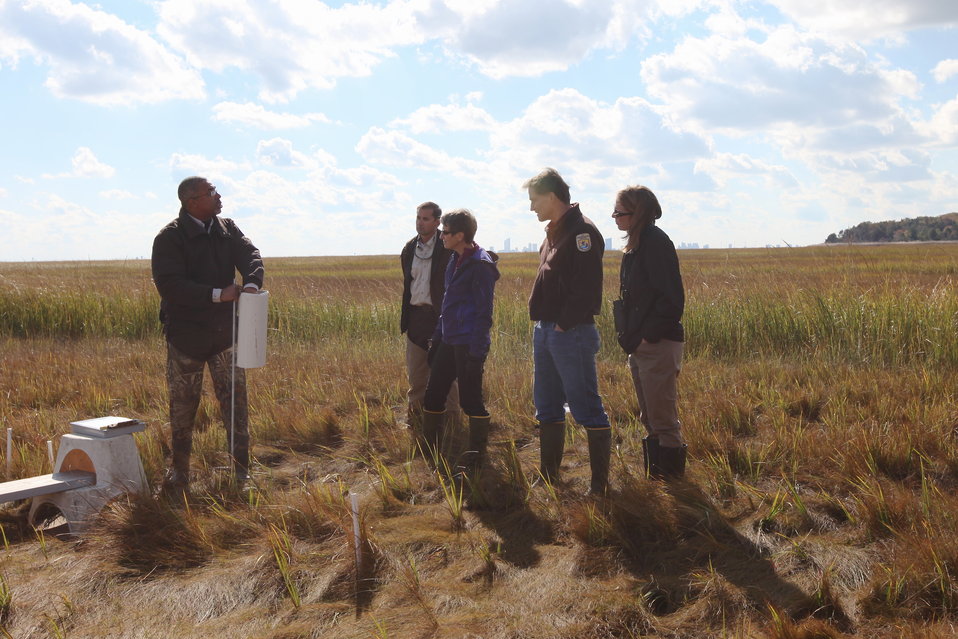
Surface Elevation Table

Secretary Jewell, Director Ashe and Regional Director Weber learn from biologist Vinny Turner how a surface elevation table is used to measure relative sediment elevation.